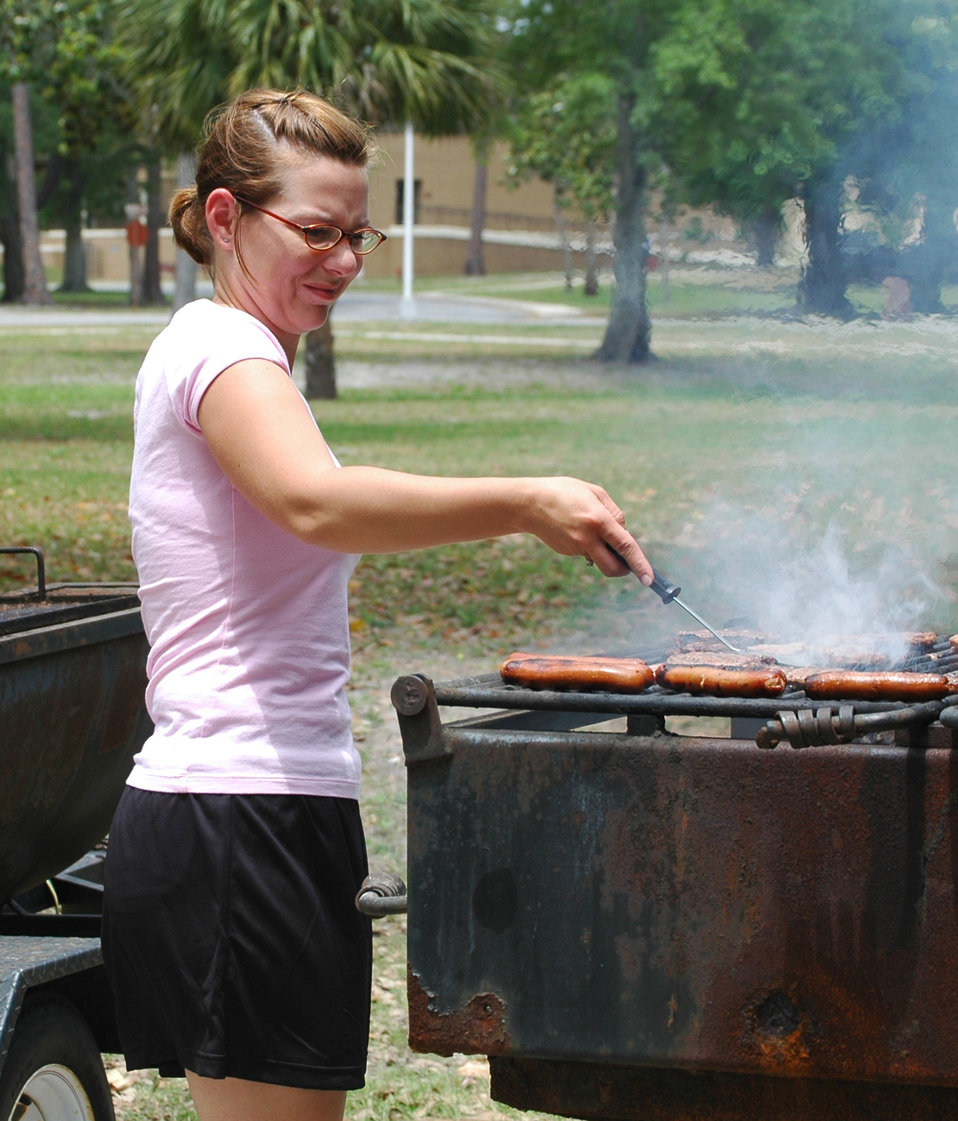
Airmen help Florida youth see inner potential

Staff Sgt. Sally Mellen grills hamburgers and hot dogs May 5 at Tyndall Air Force Base, Fla. The lunch was provided to 10 youths involved with the Liberty Unit for Specialized Treatment program from Bristol, Fla. The teenagers were chosen based on their good conduct through the program for a period of at least two months and two weeks. Sergeant Mellen is the 325th Security Forces Squadron command section NCO in charge.